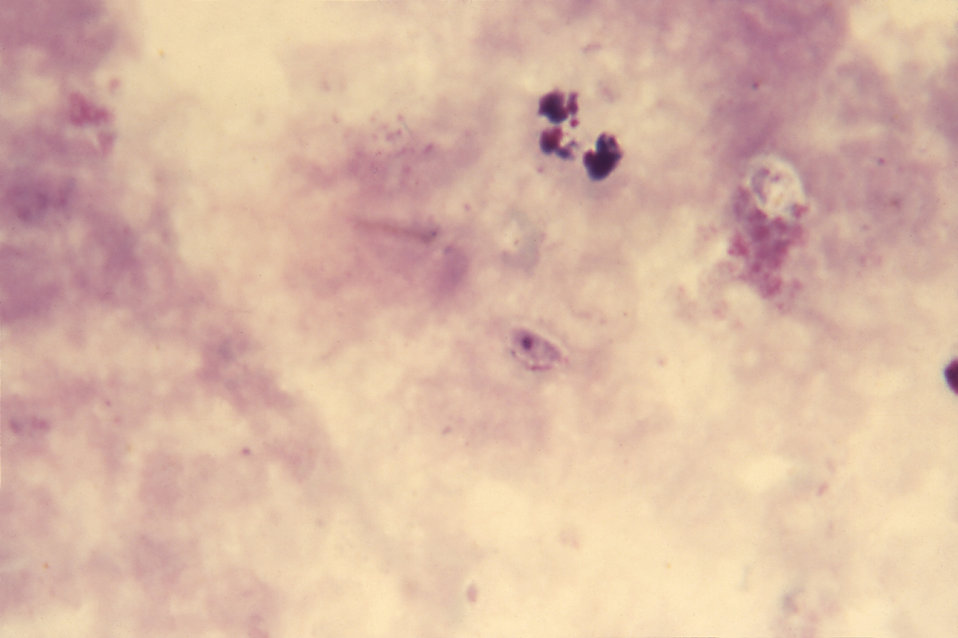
This thick film micrograph reveals an artifact caused by a mold resembling a P. falciparum gametocyte.